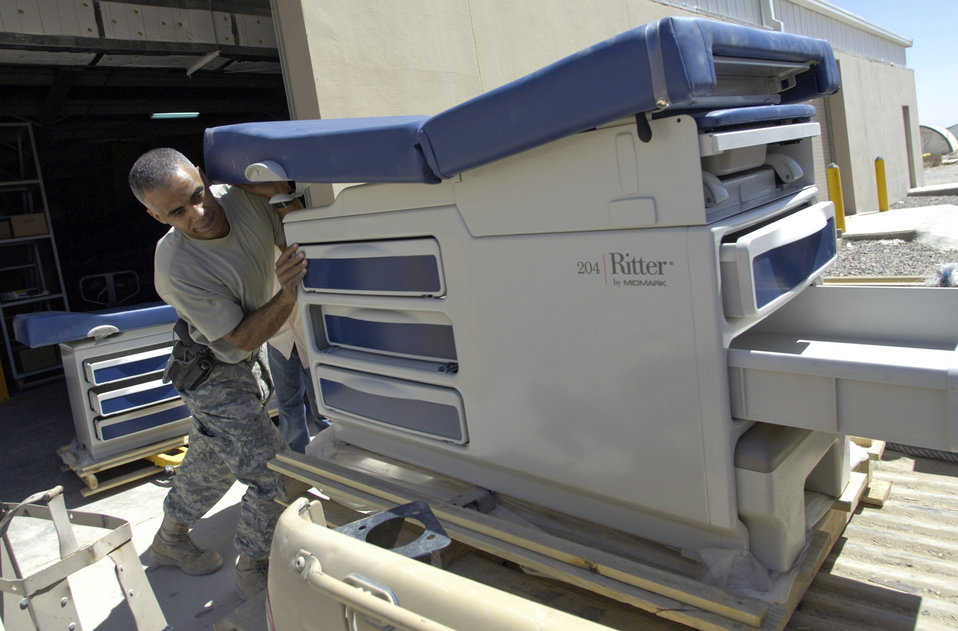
Airmen mentorship helps develop Afghan hospital

Army Staff Sgt. Johnathan Moore loads a medical examination table onto a pickup truck Aug. 17 in Afghanistan. The table is being transported to a new $6.5 million, 50-bed hospital on the Afghan National Army's Hero Camp, located outside Kandahar Airfield in southern Afghanistan. Sergeant Moore is a medical logistics technician and Afghan national army mentor, and is deployed from Walter Reed Army Medical Center in Washington, D.C. He is assigned to the Combined Security Transition Command-Afghanistan on Camp Eggers in Kabul.